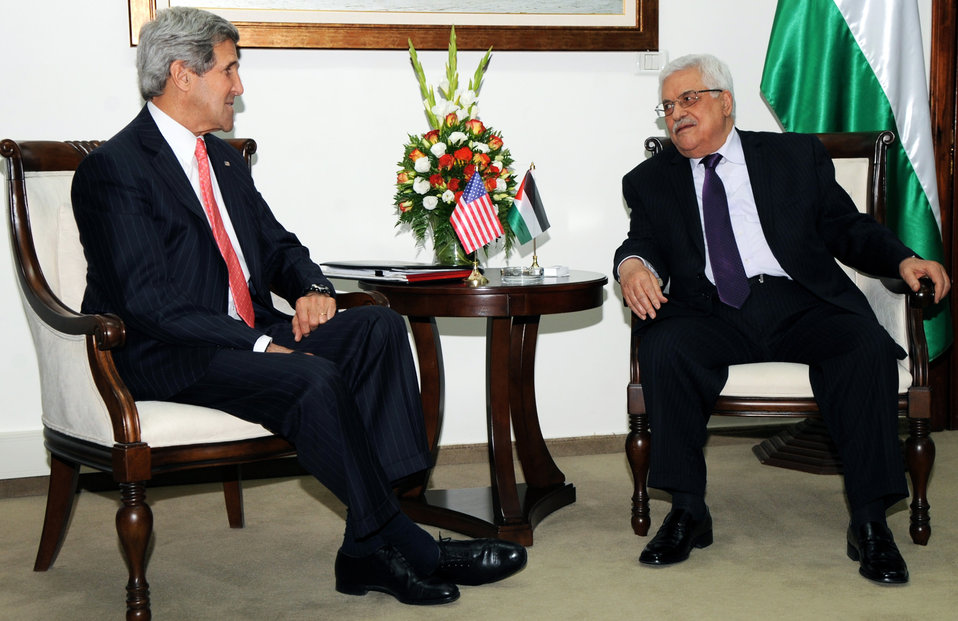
Secretary Kerry Meets With Palestinian President Abbas

U.S. Secretary of State John Kerry meets with Palestinian President Mahmoud Abbas in Ramallah on May 23, 2013.